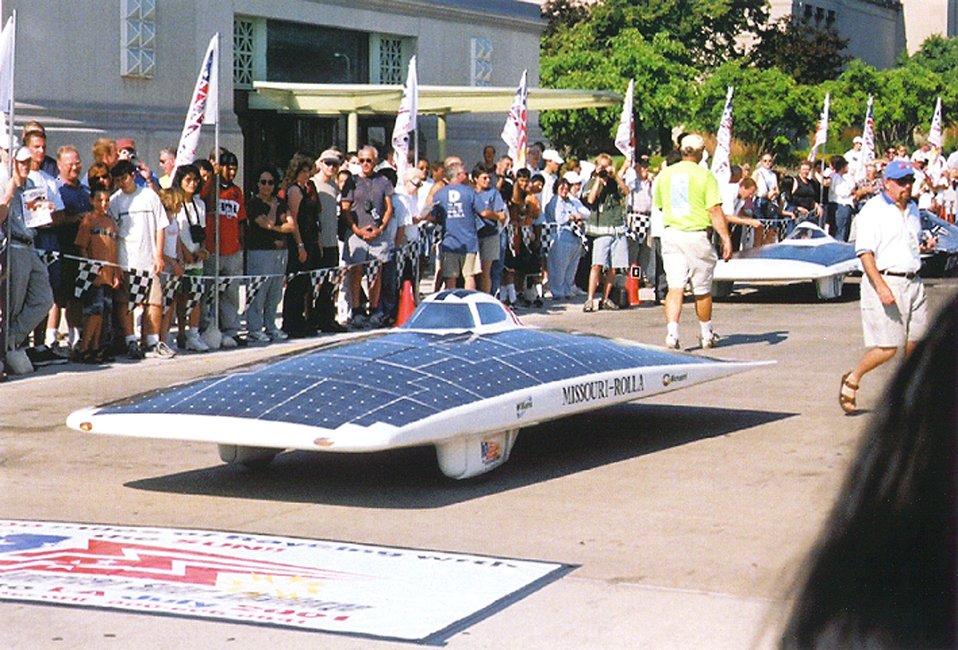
UNIVERSITY OF MISSOURI-ROLLA, 1999 WINNER, TOOK SECOND PLACE IN THE SOLAR CHALLENGE 2001.

THE AMERICAN SOLAR CHALLENGE (SUNRAYCE) 2001, THE LONGEST SOLAR CAR RACE IN THE WORLD, IS A BIENNIAL EDUCATIONAL SPORTING EVENT IN WHICH UNIVERSITY TEAMS, COMPANIES, AND CLUBS FROM AROUND THE WORLD COMPETE TO BUILD AND RACE SOLAR POWERED CARS ACROSS THE UNITED STATES. THIS YEAR THE RACE BEGAN IN CHICAGO, ILLINOIS ON JULY 15, 2001 AND WAS COMPLETED ON JULY 25, 2001 IN CLAREMONT, CALIFORNIA, TRAVELING ALL ALONG OLD ROUTE 66.